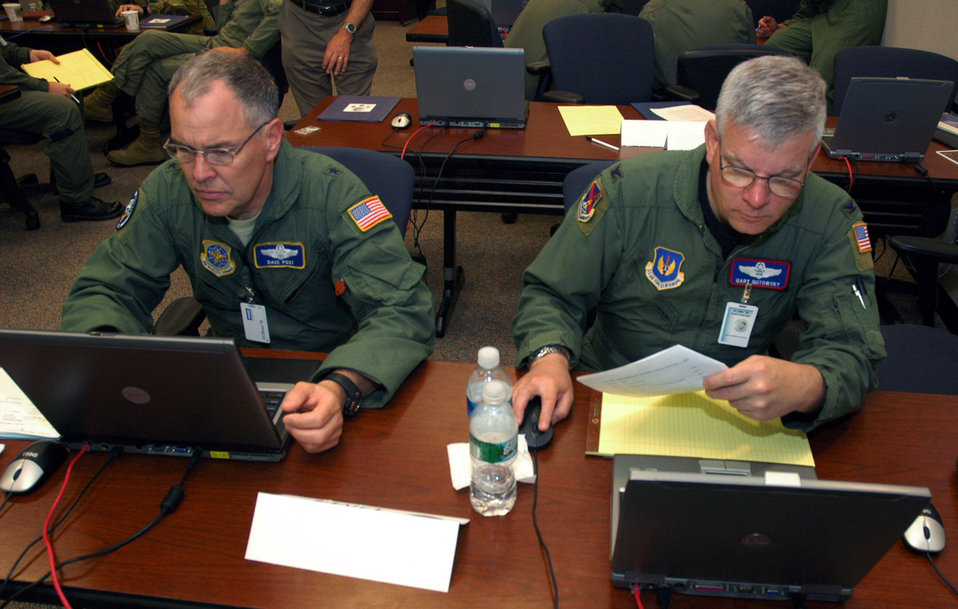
Global Mobility Wargame explores future of air mobility

Brig. Gen. David S. Post and Col. Gary Gutowsky participate in the planning for the Global Mobility Wargame 2008 June 18 in the Air Force Expeditionary Center on Fort Dix, N.J. General Post is the mobilization assistant to the Director of Strategic Plans, Requirements and Programs for Air Mobility Command at Scott Air Force Base, Ill. Colonel Gutowsky is the Air Mobility Division chief at the 603rd Air and Space Operations Center at Ramstein Air Base, Germany.